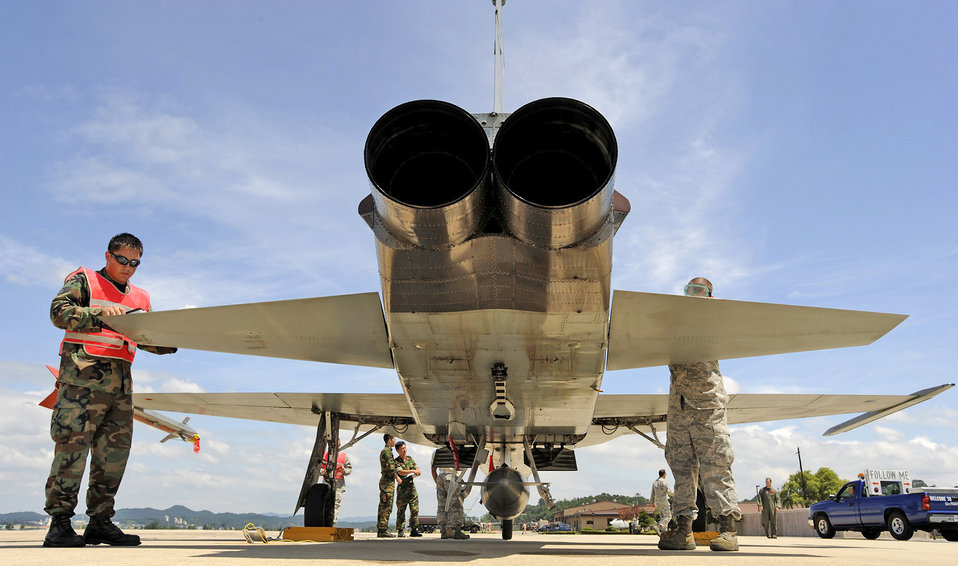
Osan cross-servicing program fosters good relations

Staff Sgts. James Hohlt (left) and Trenton Schreyer recover an F-5 Tiger II Aug. 10 at Osan Air Base, South Korea. They are servicing the F-5 as part of the Osan AB combat cross-servicing program. The program is a mutual agreement between the U.S. and South Korean air forces that allows the maintainers from both services to get hands-on experience working on each other's aircraft.